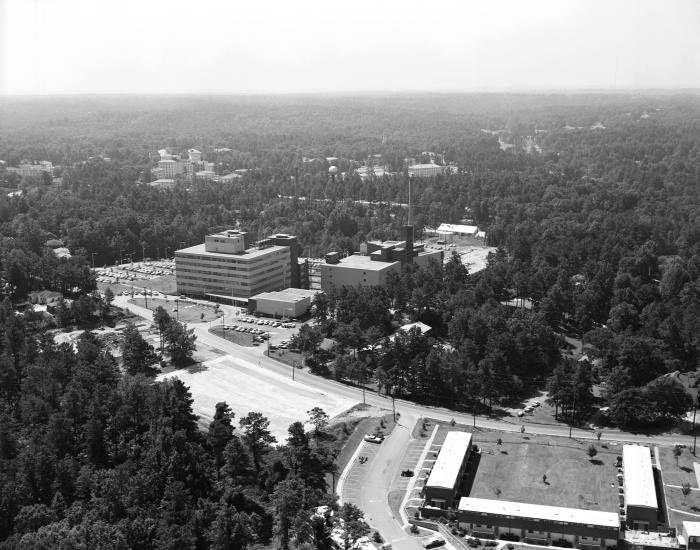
This historic aerial view, looking towards the south, southeast, depicts the appearance of the Centers for Disease Control and Prevention's (CDC) geographic presence in 1962. Building 1 is seen on the south-side of Clifton Road, accessible by its curved driveway entrance.